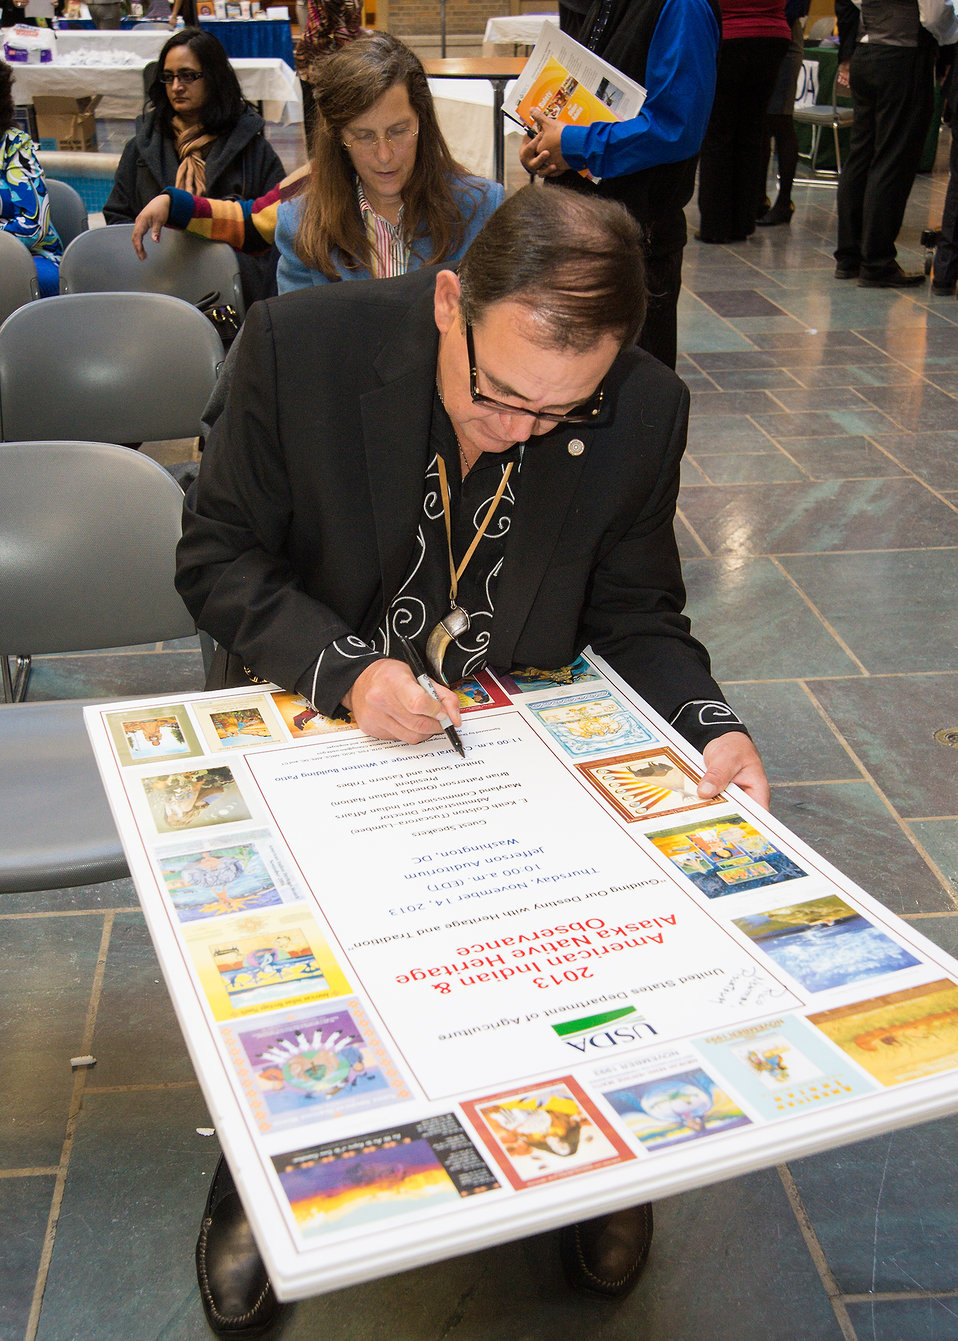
United South and Eastern Tribes President Oneida Indian Nation Brian Patterson signs an event poster at the 2013 American Indian and Alaska Native Heritage Observance at the U.S. Department of Agriculture on Thursday, Nov. 14, 2013 in Washington, D.C. The theme of this year’s event was “Guiding Our Destiny with Heritage and Traditions.'